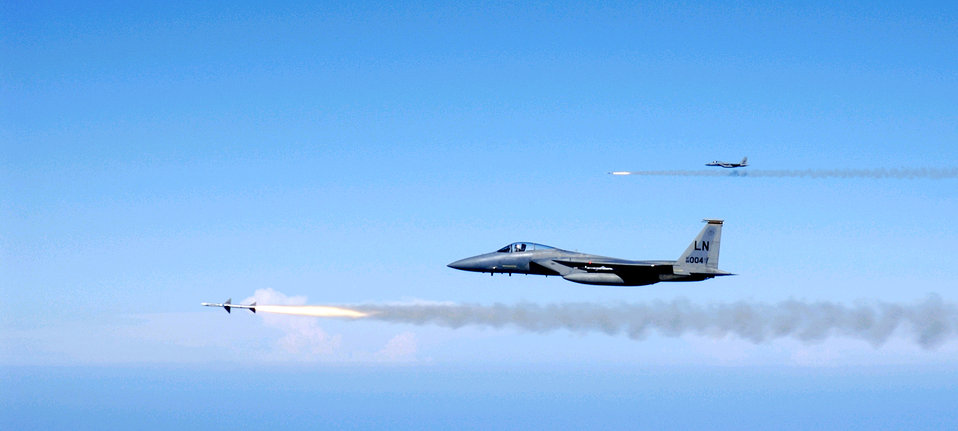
Target locked

OVER THE GULF OF MEXICO -- Capts. Matt French and Daniel Arkema fire AIM-7M Sparrow medium-range air-to-air missiles from their F-15C Eagles during an exercise here Aug. 3. Captains French and Arkema are pilots with the 493rd Fighter Squadron at Royal Air Force Lakenheath, England.